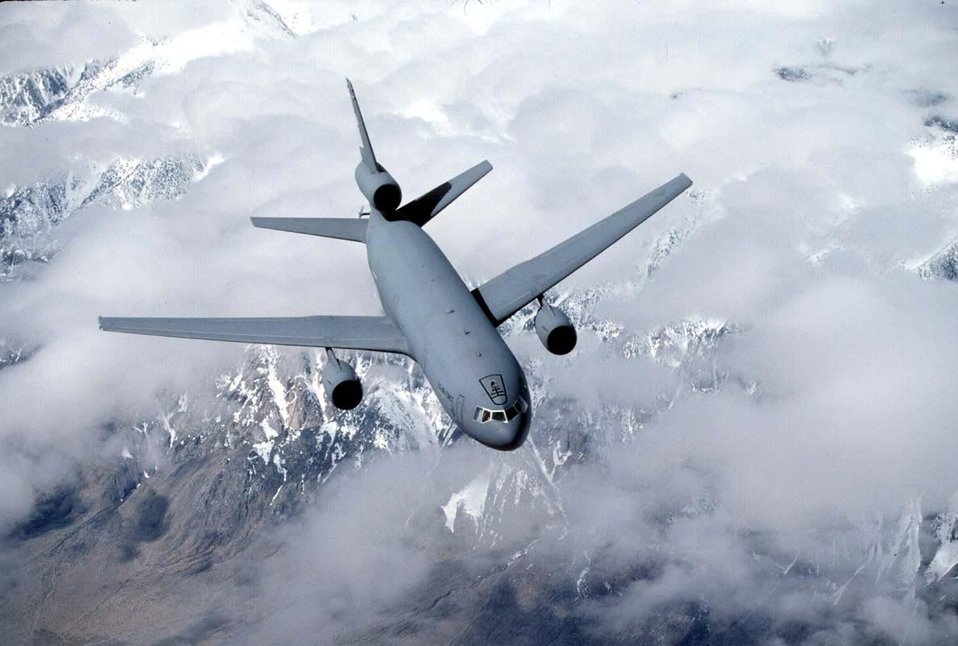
KC-10A Extender

FILE PHOTO -- The KC-10A Extender is an Air Mobility Command advanced tanker and cargo aircraft designed to provide increased global mobility for U.S. armed forces. Using either an advanced aerial refueling boom, or a hose and drogue refueling system, the KC-10A can refuel a wide variety of U.S. and allied military aircraft. It is equipped with special lighting for night operations. The KC-10A's boom operator controls refueling operations through a digital fly-by-wire system. Sitting in the rear of the aircraft, the operator can see the receiver aircraft through a wide window. During boom refueling operations, fuel is transferred to the receiver at a maximum rate of 1,100 gallons per minute; the hose and drogue refueling maximum rate is 470 gallons per minute. The KC-10A can be air-refueled by a KC-135 or another KC-10A to increase its delivery range.